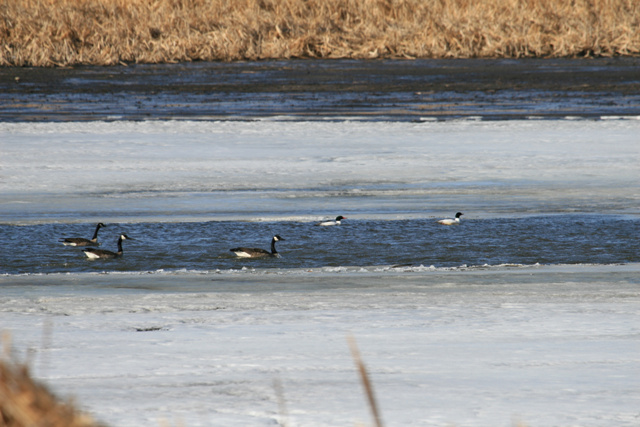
Spring Migrants